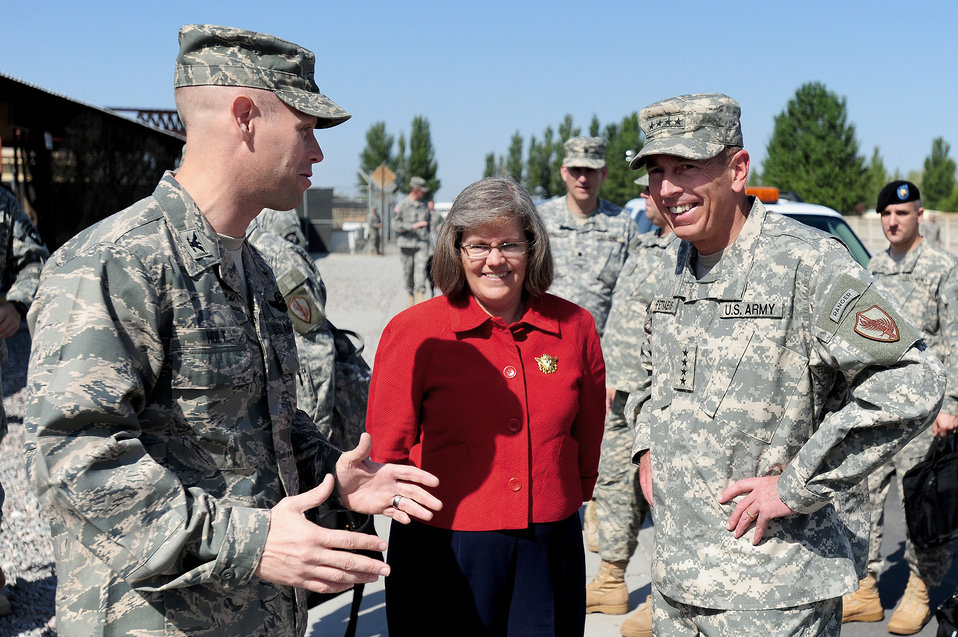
USCENTCOM commander visits troops at Manas

Col. Blaine Holt gives a tour of the 376th Air Expeditionary Wing facilities to Gen. David Petraeus, the U.S. Central Command commander, and his wife Hollister Petraeus Aug. 16 at the Transit Center at Manas, Kyrgyzstan. General and Mrs. Petraeus toured several 376th AEW facilities and met with soldiers transiting through Manas from Afghanistan. General Petraeus is the U.S. Central Command commander. Colonel Holt is the 376th AEW commander.